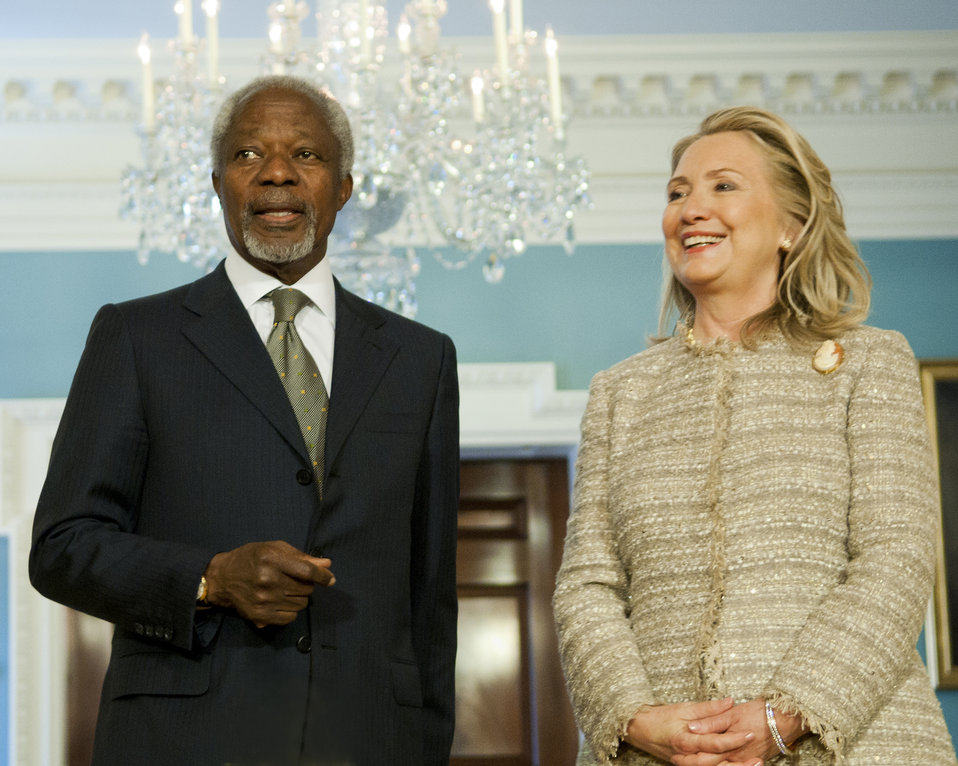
Secretary Clinton Meets With Special Envoy Annan

U.S. Secretary of State Hillary Rodham Clinton meets with UN-Arab League Joint Special Envoy for Syria Kofi Annan at the U.S. Department of State in Washington, D.C., on June 8, 2012.